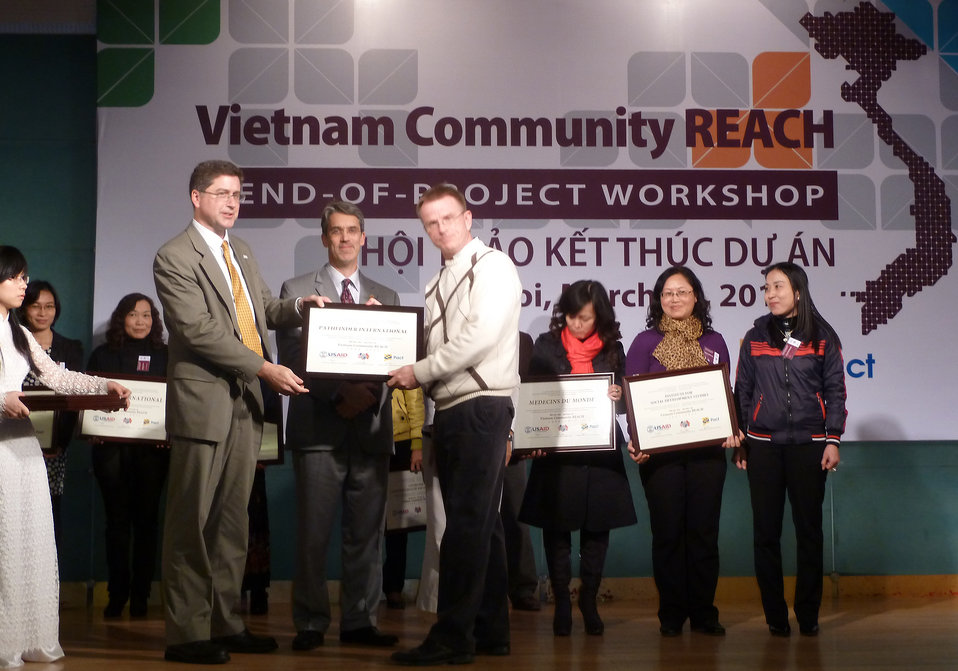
USAID, PEPFAR, and Pact award certificates to local and international partners for their work in addressing HIV in Vietnam

Community REACH project close-out with USAID and implementing partner, Pact